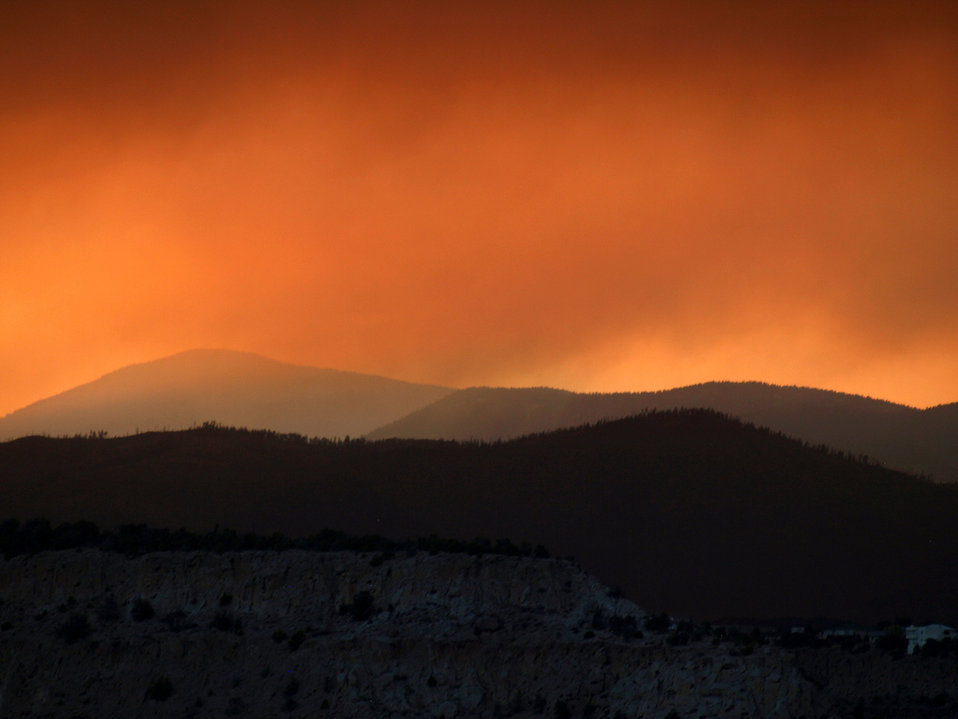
Looking northwestern from Main Hill Road, which connects Los Alamos county and Pojoaque Valley.

The Las Conchas Fire started on June 26, 2011, it was caused by a fallen tree that caught fire after it came in contact with power lines nearby. The fire had burned over 121,000 acres, including 63 residences. At no time were hazardous materials in danger at Los Alamos National Laboratory. The lab was closed for a week and reopened on July 6th.